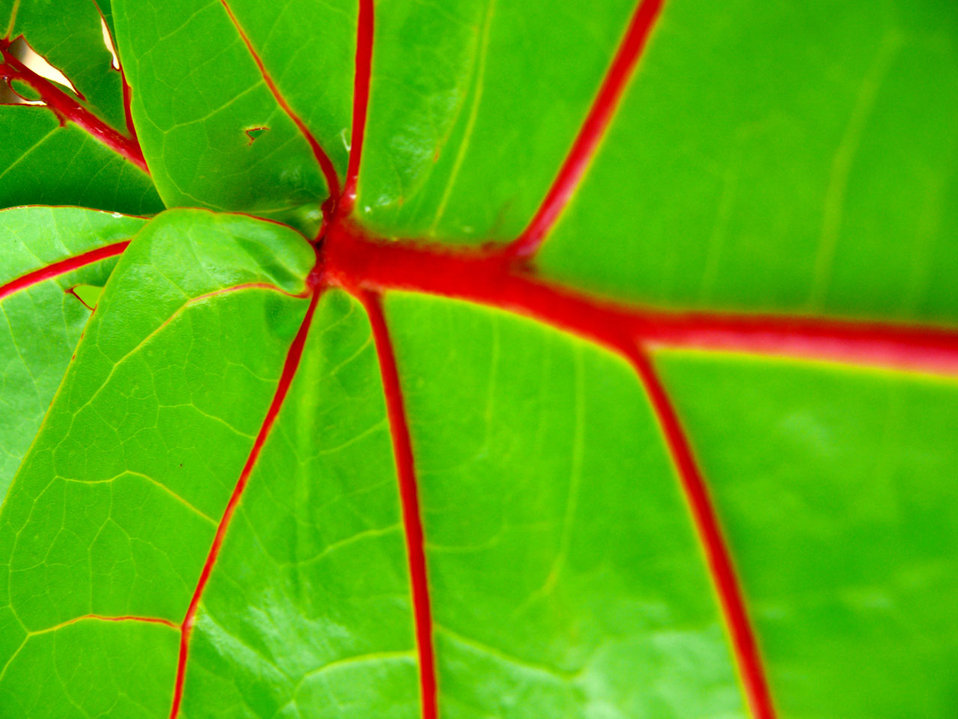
Leaf

Exotic leaf.